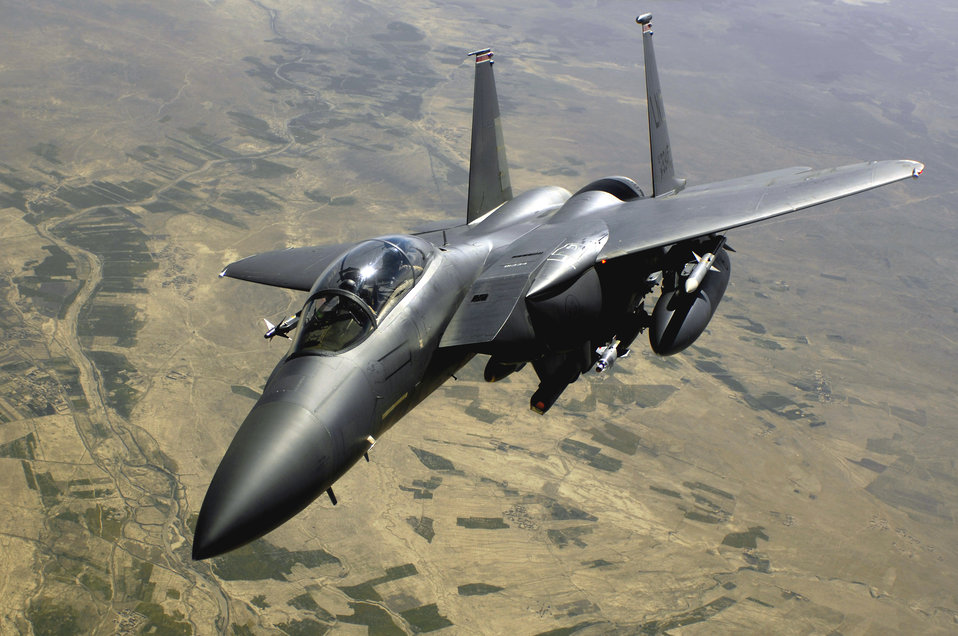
June 8 airpower summary: F-15Es deter enemy

An Air Force F-15E Strike Eagle aircraft returns to the fight after receiving fuel from a KC-135R Stratotanker during a mission over Afghanistan